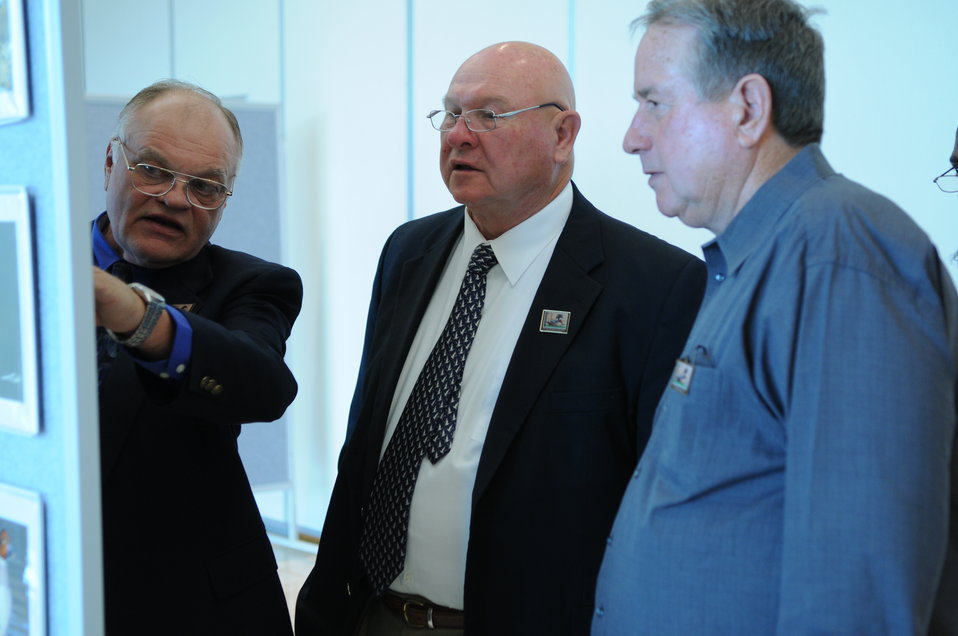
Judging

The U.S. Fish & Wildlife Service sponsored the 2012 Federal Duck Stamp Art Contest September 28 and 29 in Ogden, Utah, at Weber State University. A panel of five judges was responsible for choosing the art work used to design the 2013-2014 Migratory Bird Hunting and Conservation Stamp.